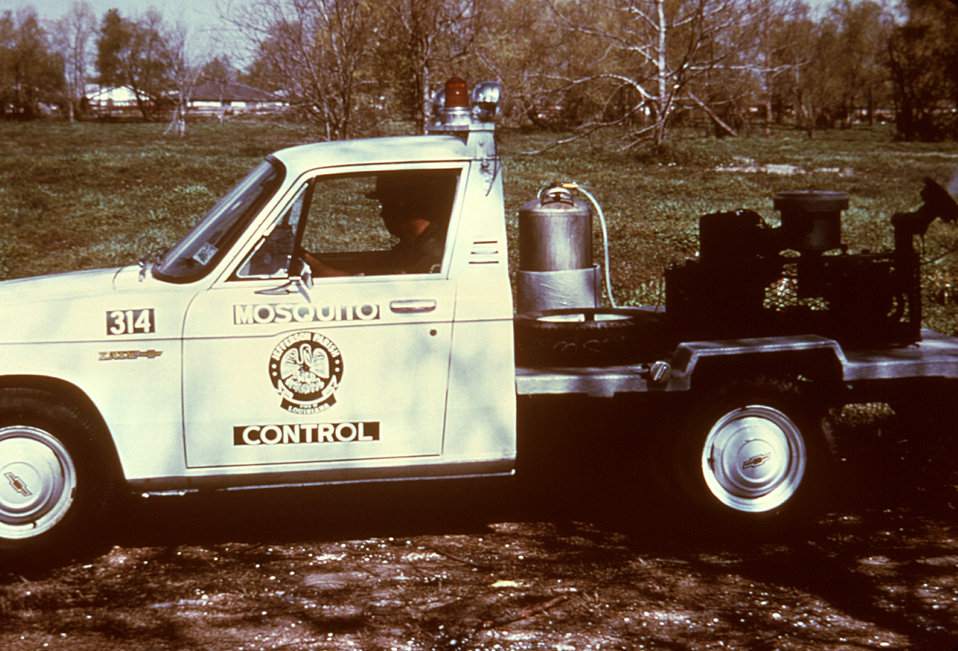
This 1981 image depicts a Jefferson Parrish, New Orleans, Louisiana mosquito control mini-pickup vehicle outfitted with a truck-mounted LECO-HD ULV (ultra-low volume) non-thermal fog generator.